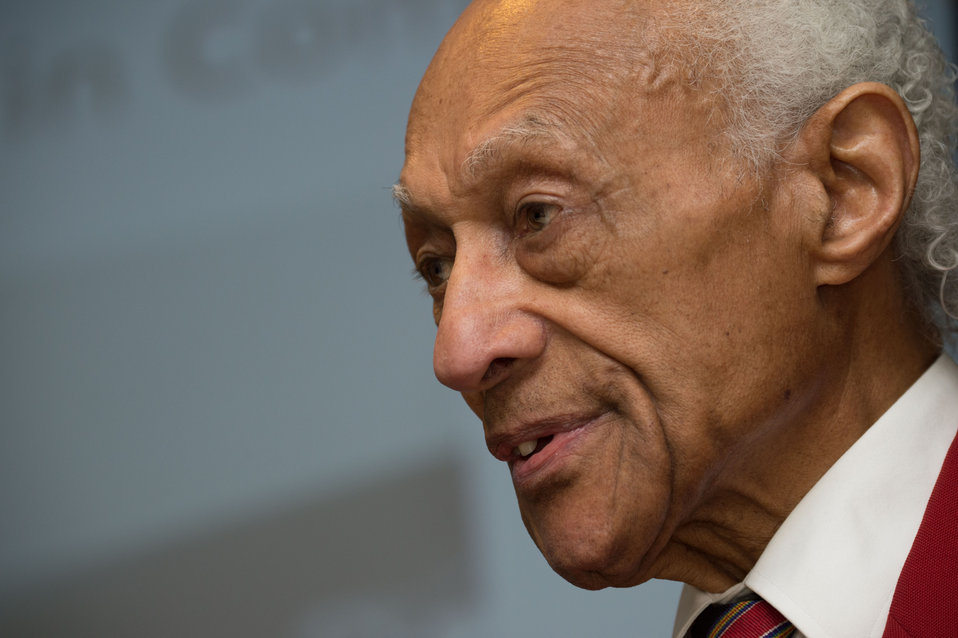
Tuskegee Airmen Incorporated (TAI) National Historian William F. Holton speaks at the U.S. Department of Agriculture's (USDA), Office of the Assistant Secretary for Civil Rights (OASCR) program “In conversation With Tuskegee Airmen”, which honored the airmen’s successes both overseas and at home at USDA in Washington, D.C. on Thursday Mar. 27, 2014. Holton spoke about his experiences in the U.S. Navy. Questions from the audience provided several opportunities for discussion about civil rights challenges and how they achieved success and respect.